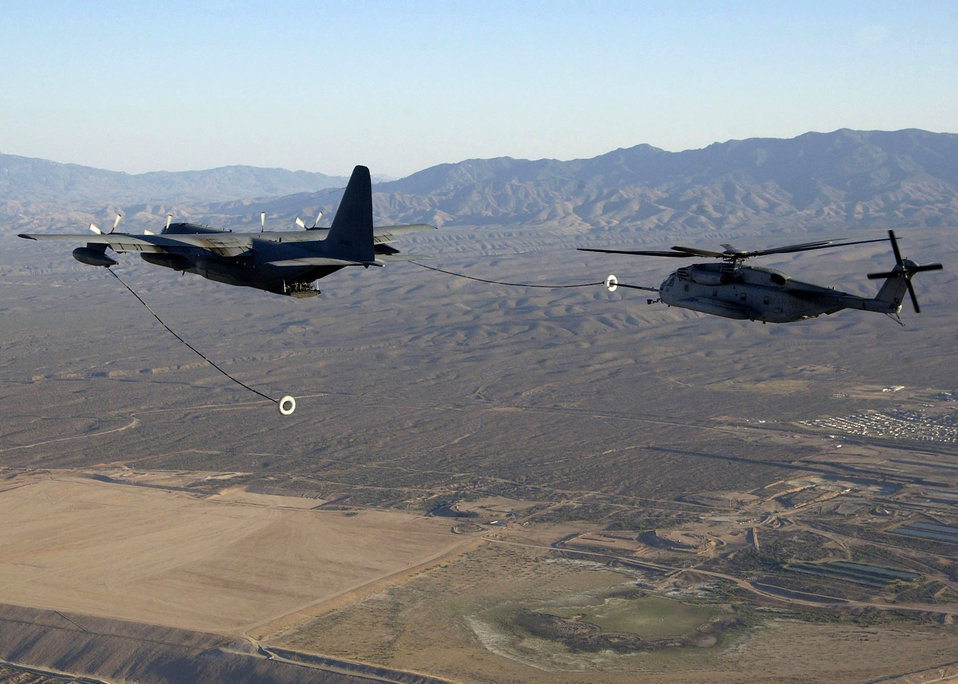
Snowbird operations

An HC-130 from the 79th Rescue Squadron at Davis-Monthan Air Force Base, Ariz., refuels a CH-53E Super Stallion helicopter from the Marine Heavy Helicopter Squadron 769 at Edwards Air Force Base, Calif. The CH-53Es are here training with Airmen as part of Davis-Monthan's joint operations training.